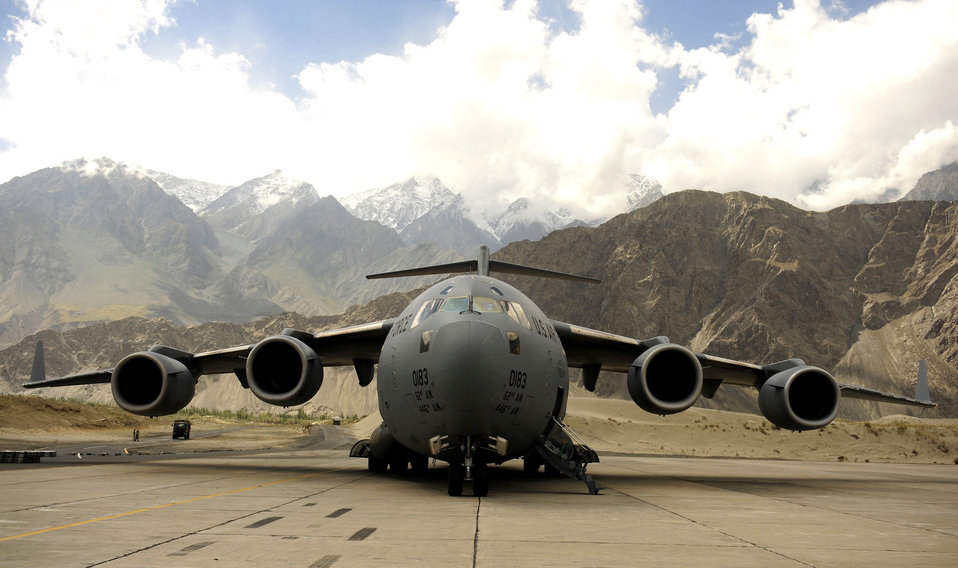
Taking a breather

A C-17 Globemaster III assigned to the 816th Expeditionary Airlift Squadron waits on the flightline at Skardu Airfield, Pakistan, Sept. 24, 2010, before crews unload 16 pallets stacked with bags of flour in support of flood relief efforts. The 816th EAS is flying supplies to Skardu Airfield and transporting internally displaced persons to Chaklala Air Force Base, Pakistan.